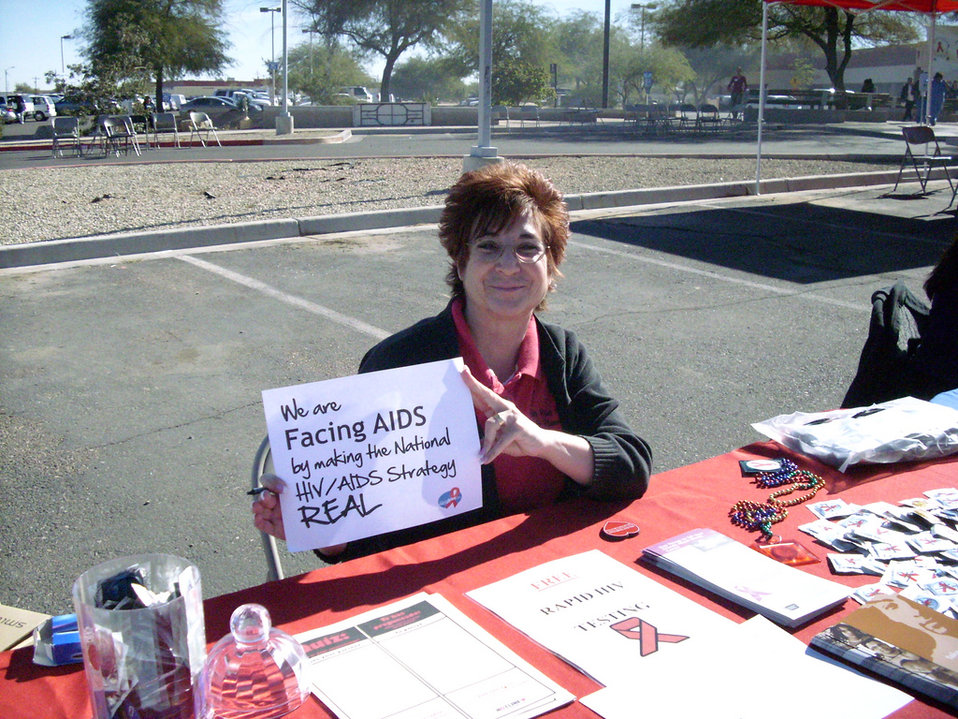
We are Facing AIDS through NHAS-39